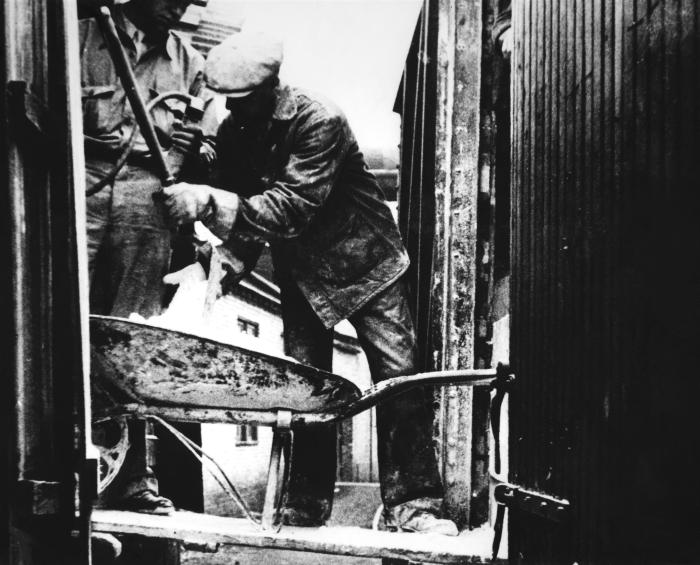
Provided by the Center for Disease Control's (CDC), National Institute for Occupational Safety and Health (NIOSH), this historic image depicted a male industrial worker who was inside a West Virginia ceramics factory, seen here as he was very carefully shoveling finely-ground quartz, which would become one of the ingredients in the creation of clay. Working within a clay-processing environment, workers should have taken precautions against the possibility of inhaling airborne particulates, which would lead to the chronic pulmonary disease known as pneumoconiosis, or silicosis, or more commonly known as 'grinders' disease', characterized by the formation of nodular fibrotic changes in the lungs. Note that this man was not wearing a filtered breathing mask, thereby, increasing his chances of contracting silicosis. The image was published in the 'Public Health Bulletin', No. 244, 1939.